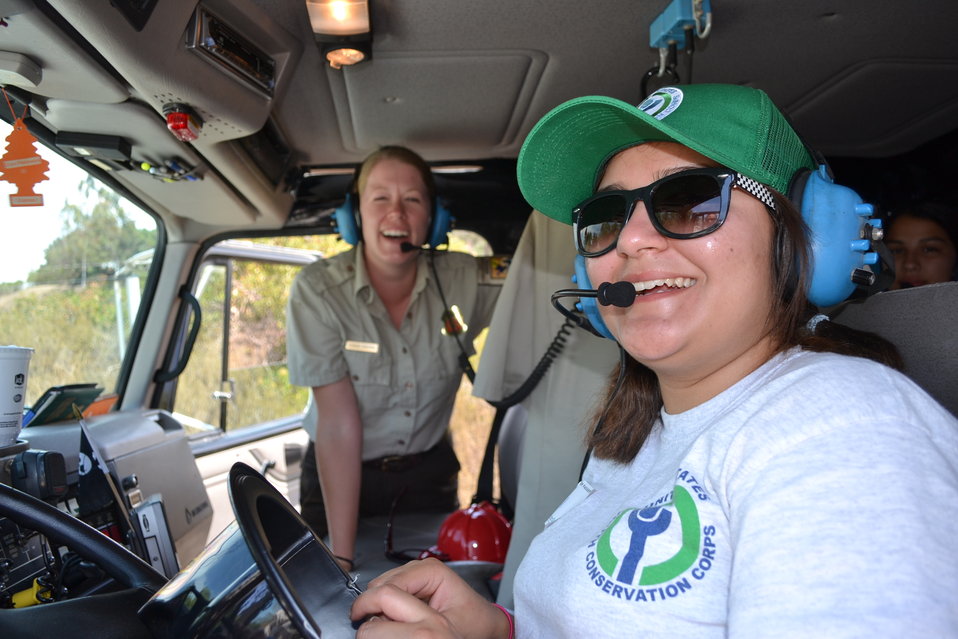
Hidden Valley Ribbon Cutting

YCC kids have fun with the fire crew. (USFWS)